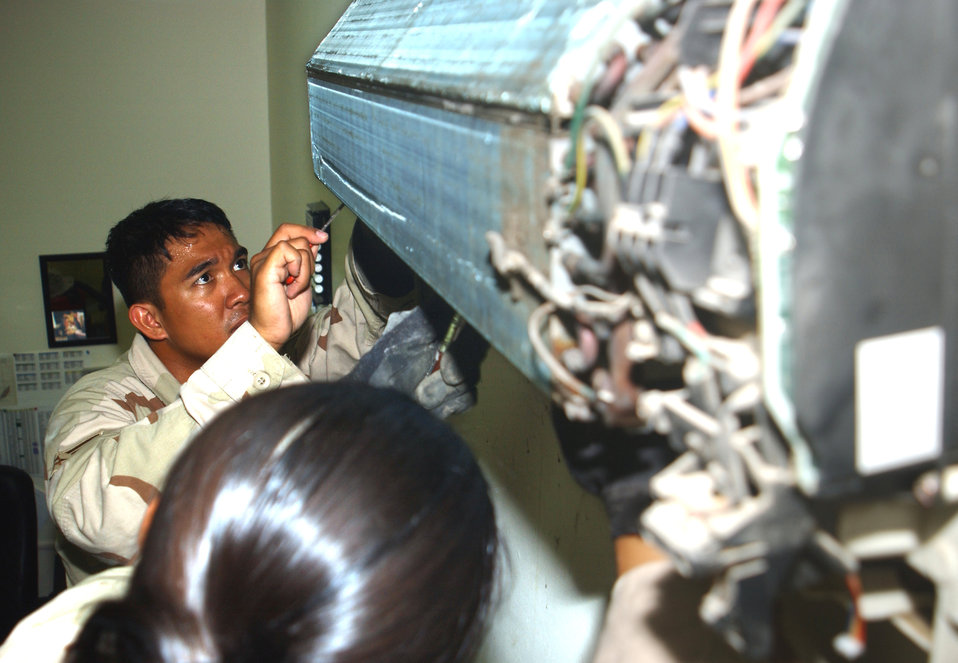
Keeping it cool

Senior Airman Ernesto Estalilla repairs a wall-mounted air conditioning unit in the third-country national escort office of at this deployed location in Southwest Asia Oct. 11. Airman Estalilla is part of a nine-person team that maintains better than 3,000 air-conditioning units here for about 1,500 people and the 380th Air Expedtionary Wing. He is assigned to the 380th Expeditionary Civil Engineer Squadron and deployed from Yokota Air Base, Japan.